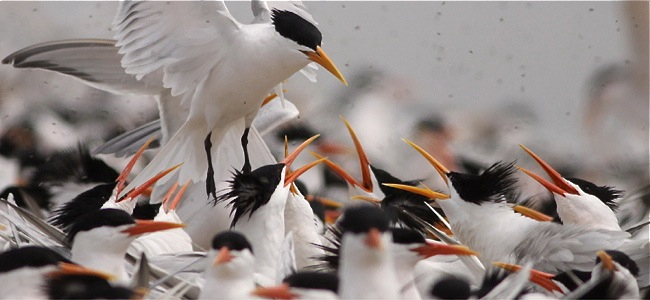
elegant terns

San Diego National Wlldlife Refuge, CA